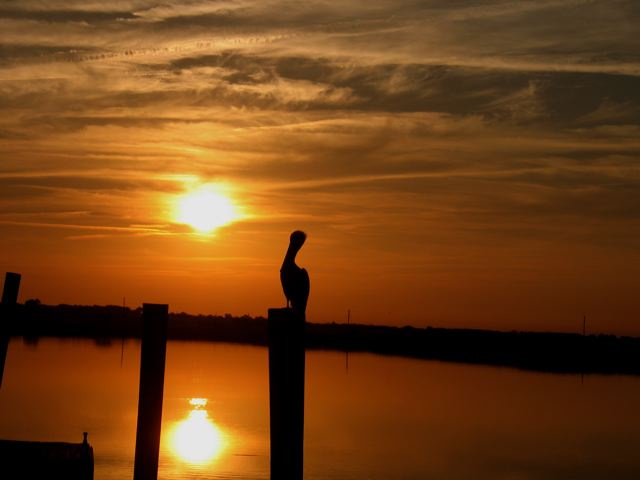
Uploaded by request of Lenore McDonald

Taken on Edisto Island, SC in front of my parents house

I try to go out on their dock to enjoy the sunset and the birds. The sights and sounds of the water, the birds, and the sunset, no matter what time of year, are always so soothing.